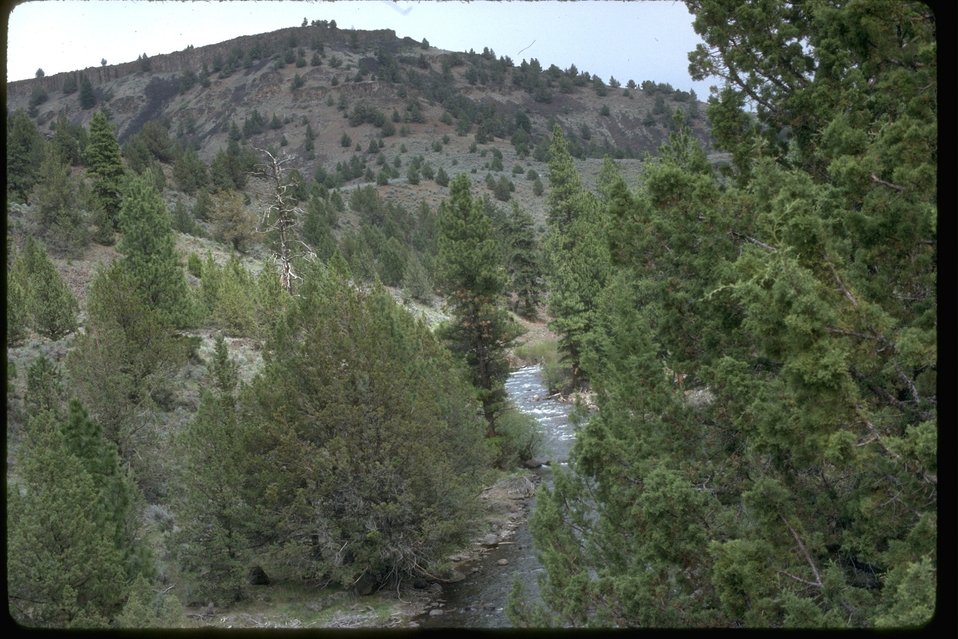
Junipers and a stream in the Malheur River-Bluebucket Creek Wilderness Study Area. OR 2-14.